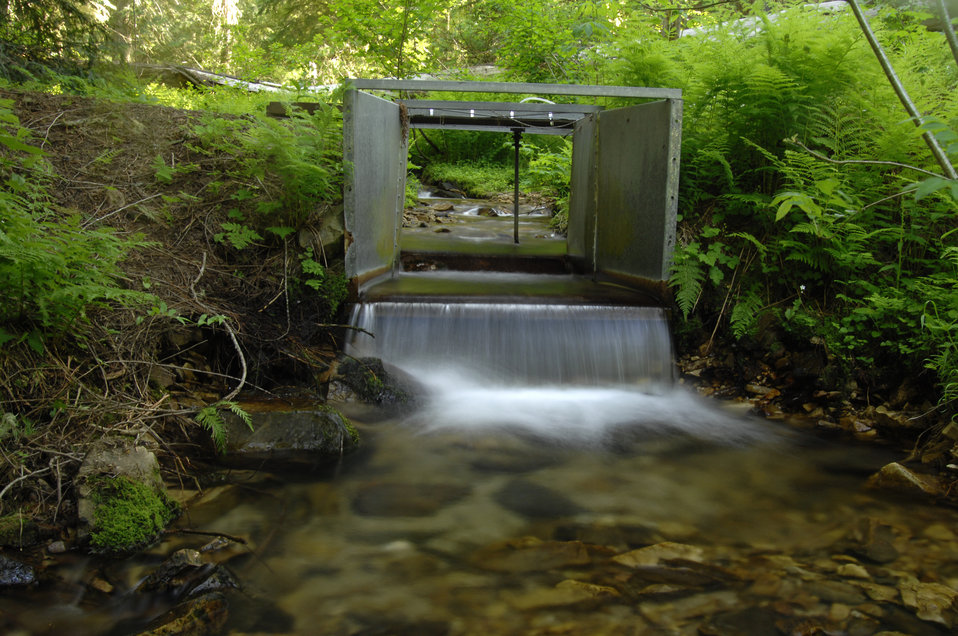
U.S. Department of Agriculture's (USDA) Cooperative State Research, Education, and Extension Service (CSREES) partners with the University of Idaho to conduct research to improve watershed habitat and water supplies near Moscow, Idaho on July 8, 2008.